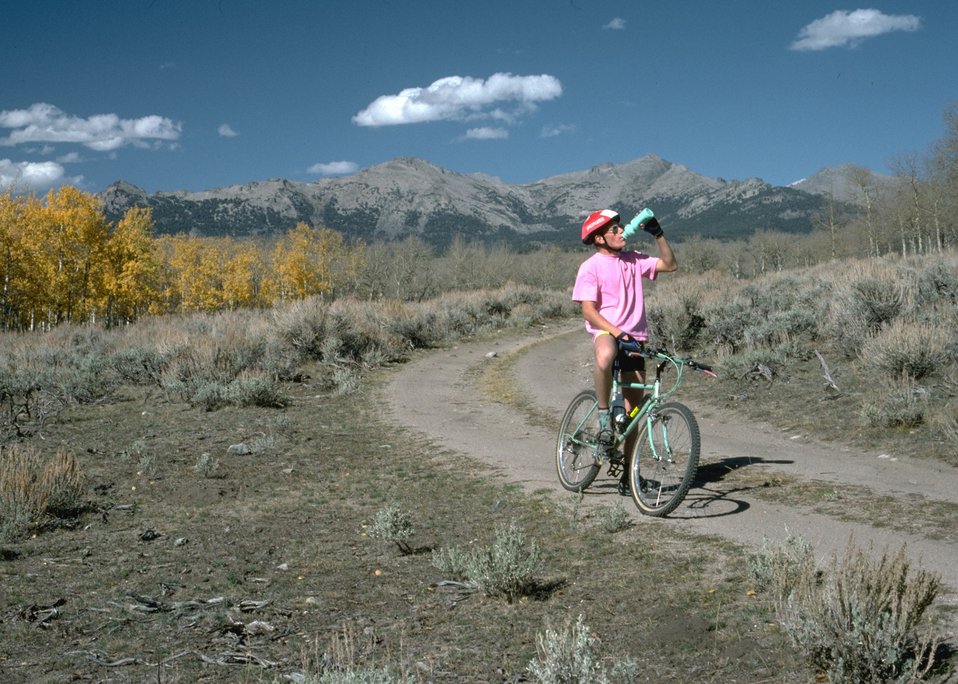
Bike riding on an unknown trail.